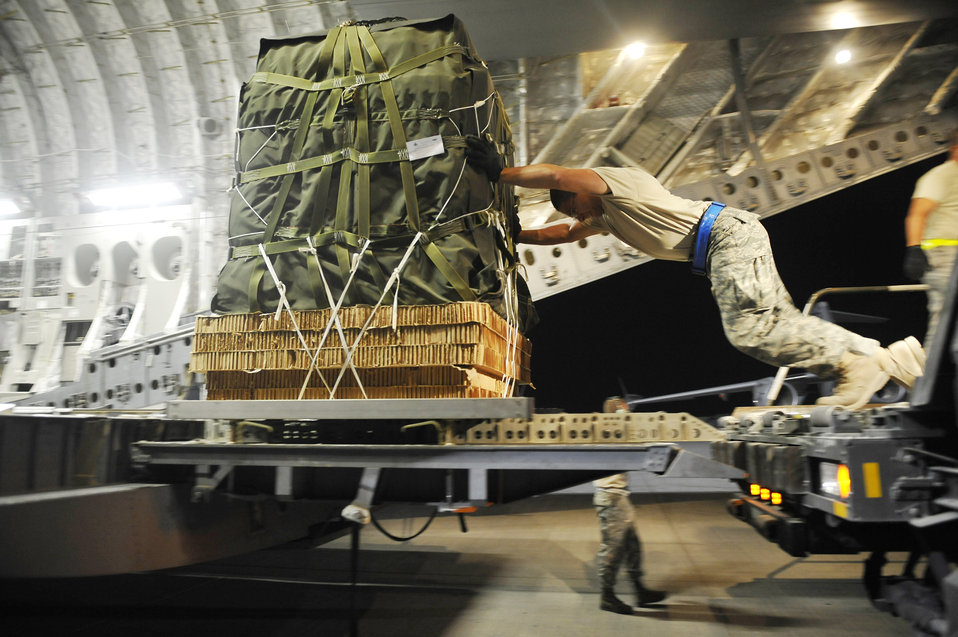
Mobility Airmen continue to deliver for warfighters

Airman 1st Class Andrew Dasilva loads a C-17 Globemaster III with container delivery system bundles Sept. 23, 2009, at an air base in Southwest Asia. The bundles, full of supplies for Marines, will be dropped to a base in Afghanistan. Airman Dasilva is an 8th Expeditionary Aircraft Maintenance Squadron ramp service specialist.